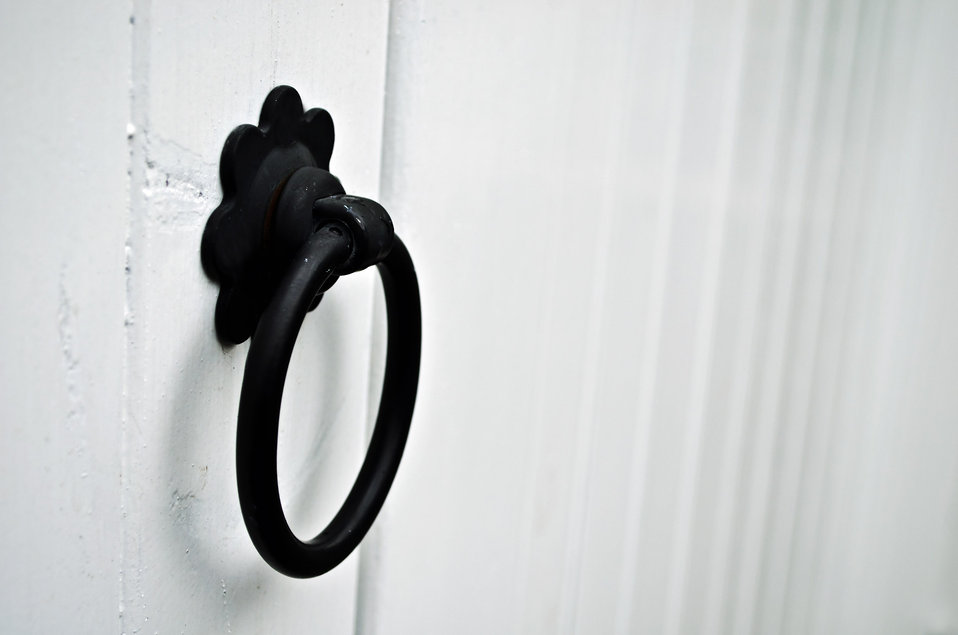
Knocker on the white door.